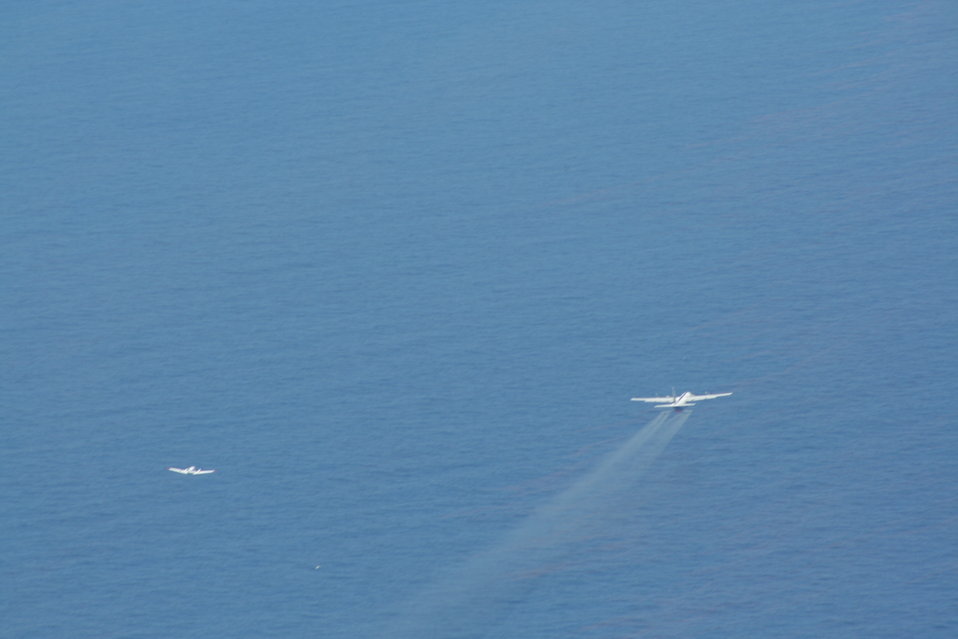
Flight 8 113